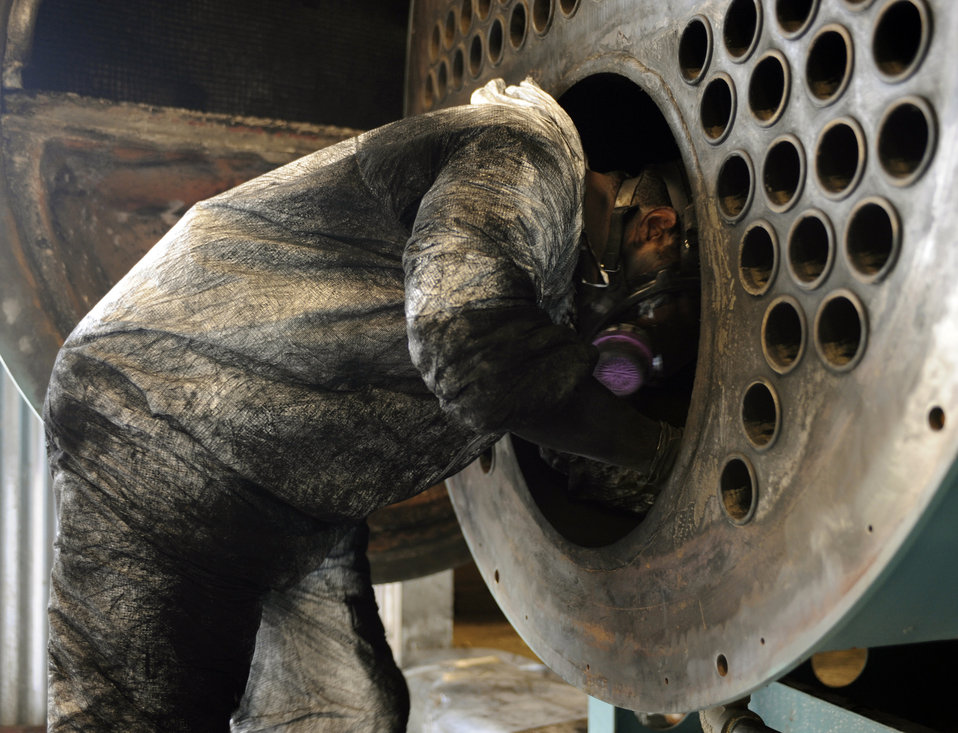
It's a dirty job, but

Senior Airman Jose Rodriguez climbs into a fire tube boiler July 26, 2010, at Eielson Air Force Base, Alaska. Airman Rodriguez is a heating, ventilation and air conditioning technician with the 354th Civil Engineer Squadron.